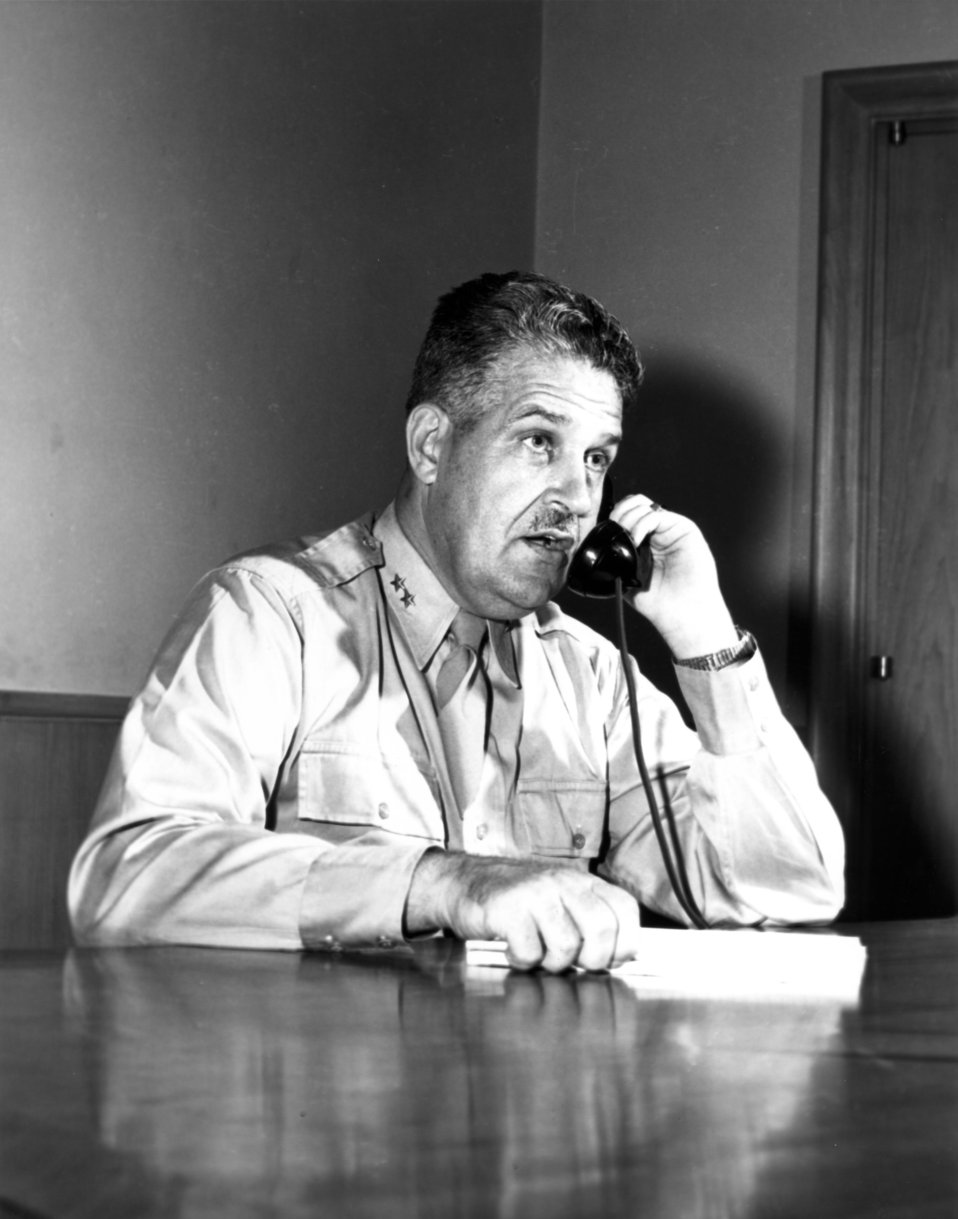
General Groves at Oak Ridge